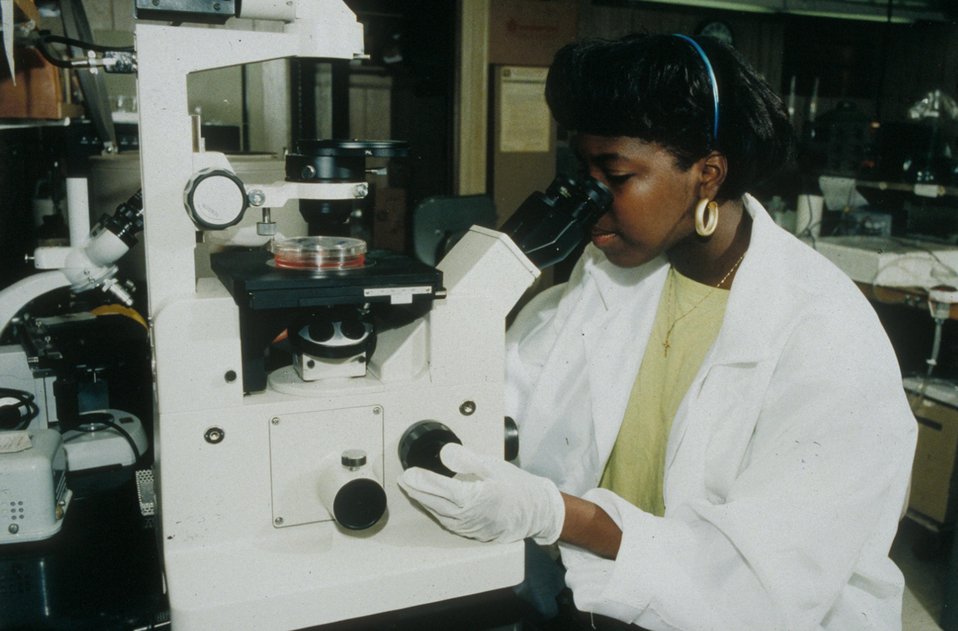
ADRIENNE GOOLSBY OF SPELMAN COLLEGE DOING RESEARCH IN CHEMICAL BIODYNAMICS.

DURING THE SCHOOL YEAR AND IN THE SUMMERS, DOE LABORATORIES PROVIDE UNDERGRADUATE SCIENCE AND ENGINEERING STUDENTS WITH RESEARCH OPPORTUNITIES AT DOE FACILITIES. STUDENTS ARE SELECTED COMPETITIVELY AND ARE CAREFULLY PAIRED WITH A DOE SCIENTIST, WITH WHOM THEY PARTICIPATE IN AN ONGOING RESEARCH PROJECT.